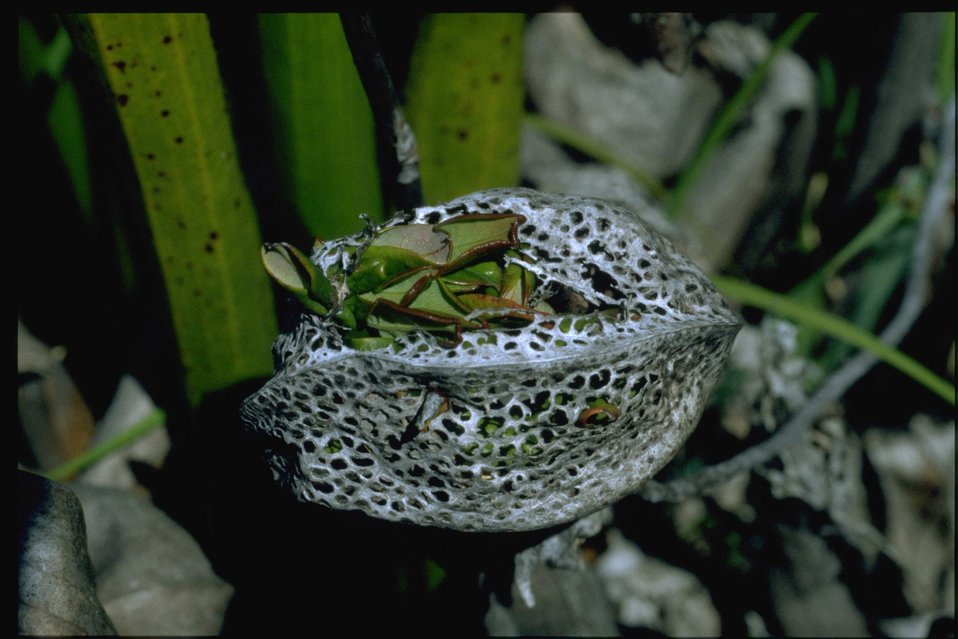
Closeup shot of Cobra Lily, Darlingtonia californica.